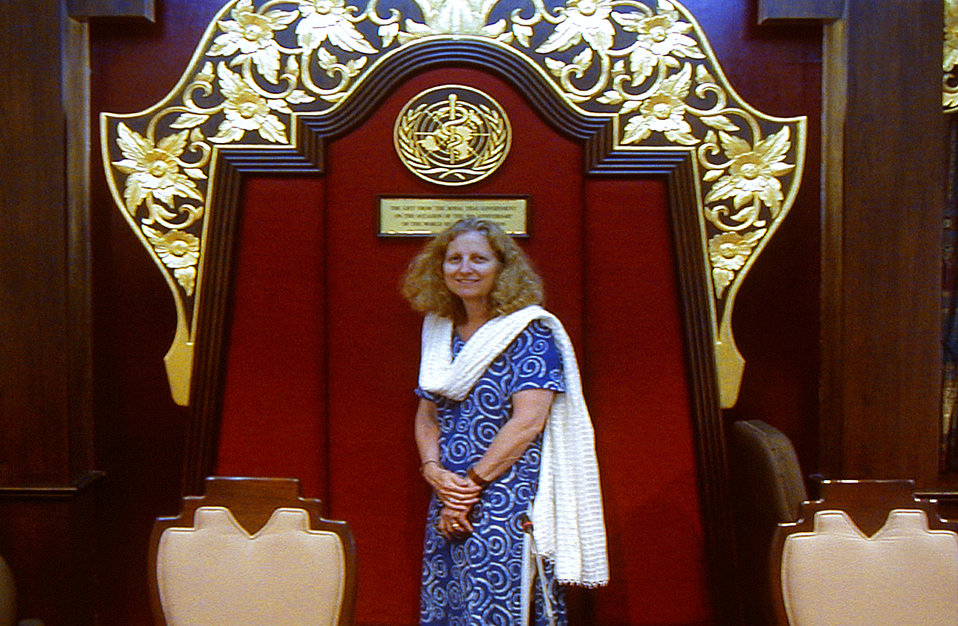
This photograph depicted Stop Transmission of Polio (Stop) team member, Chris Zahniser, B.S.N., R.N., M.P.H., standing in front of the entrance to the Central Office in Delhi, India in April, 2000. Prior to returning to the United States, the team conducted a debriefing with India's officials informing them about activities undertaken by STOP members, and the progress made from January to April of that year. Ms. Zahniser was assigned to the state of Uttar Pradesh in northern India, and spent three months working in the Districts of Gorakhpur and Deoria.